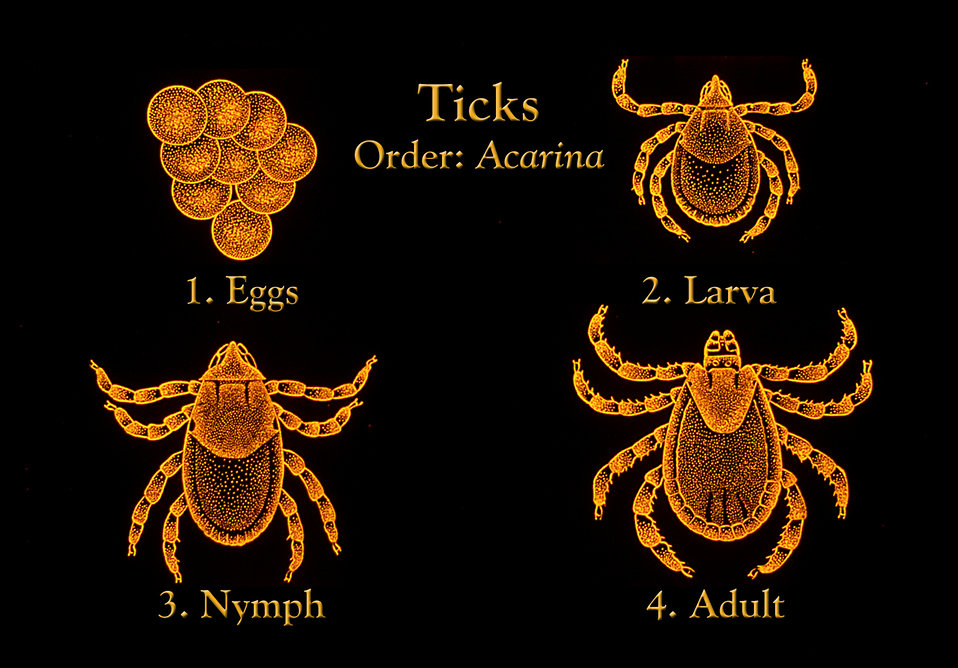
Note the morphologic features associated with the four life cycle stages through which a tick passes on its way to adulthood.